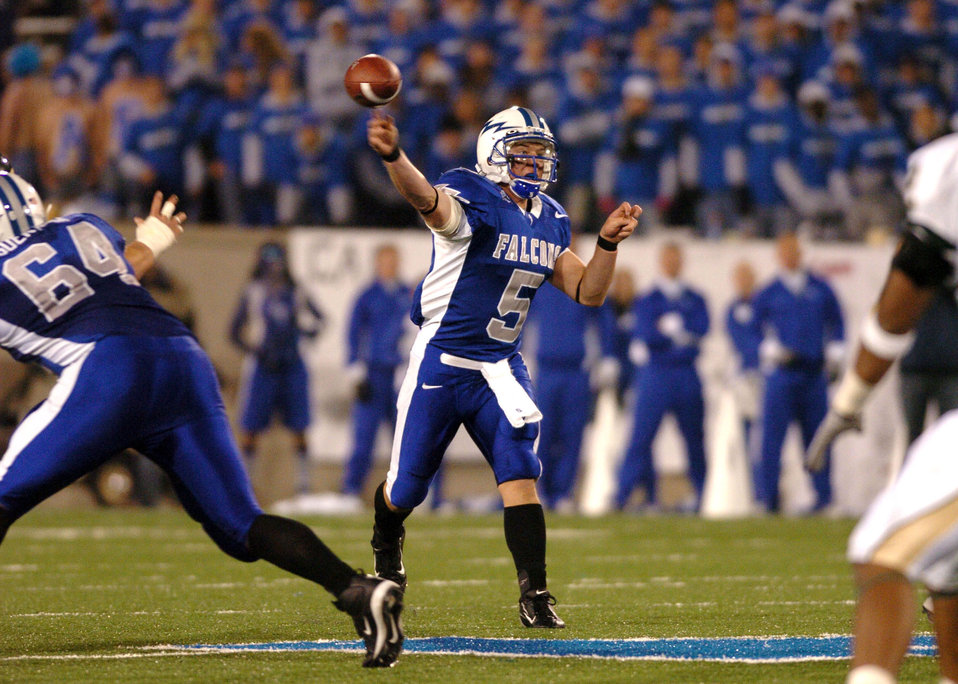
Air Attack

Air Force quarterback Shaun Carney throws downfield for a 13 yard gain and a Falcon first down Thursday night against cross-state rival Colorado State. With 109 yards rushing and 102 passing, Carnedy led Air Force to a 24-21 win after trailing at halftime 21-3.